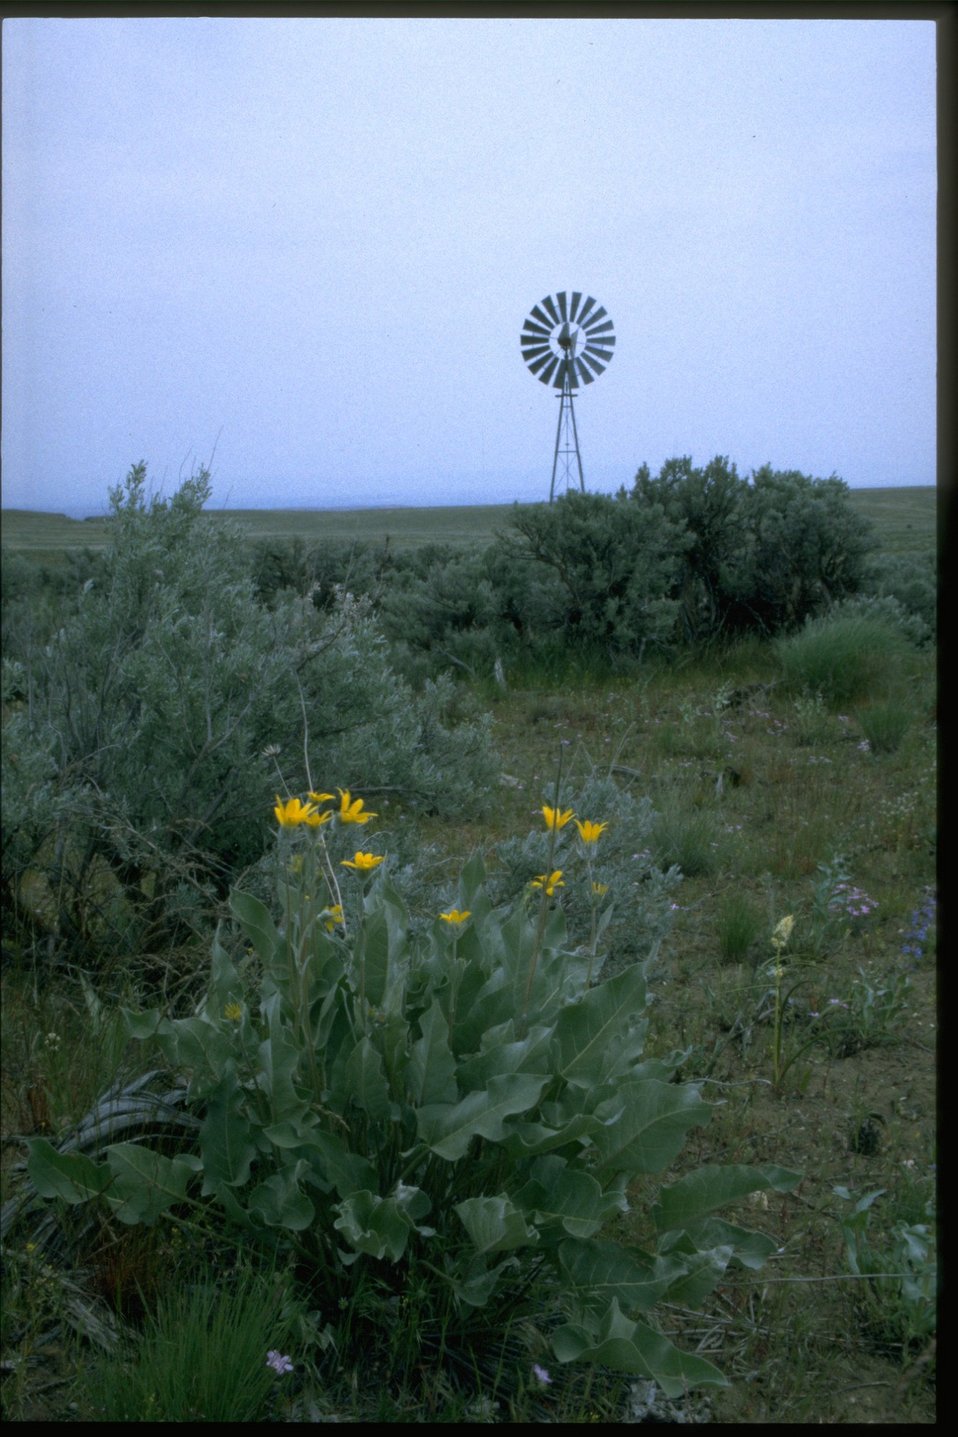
Wind Mill with Balsam wildflowers in foreground.